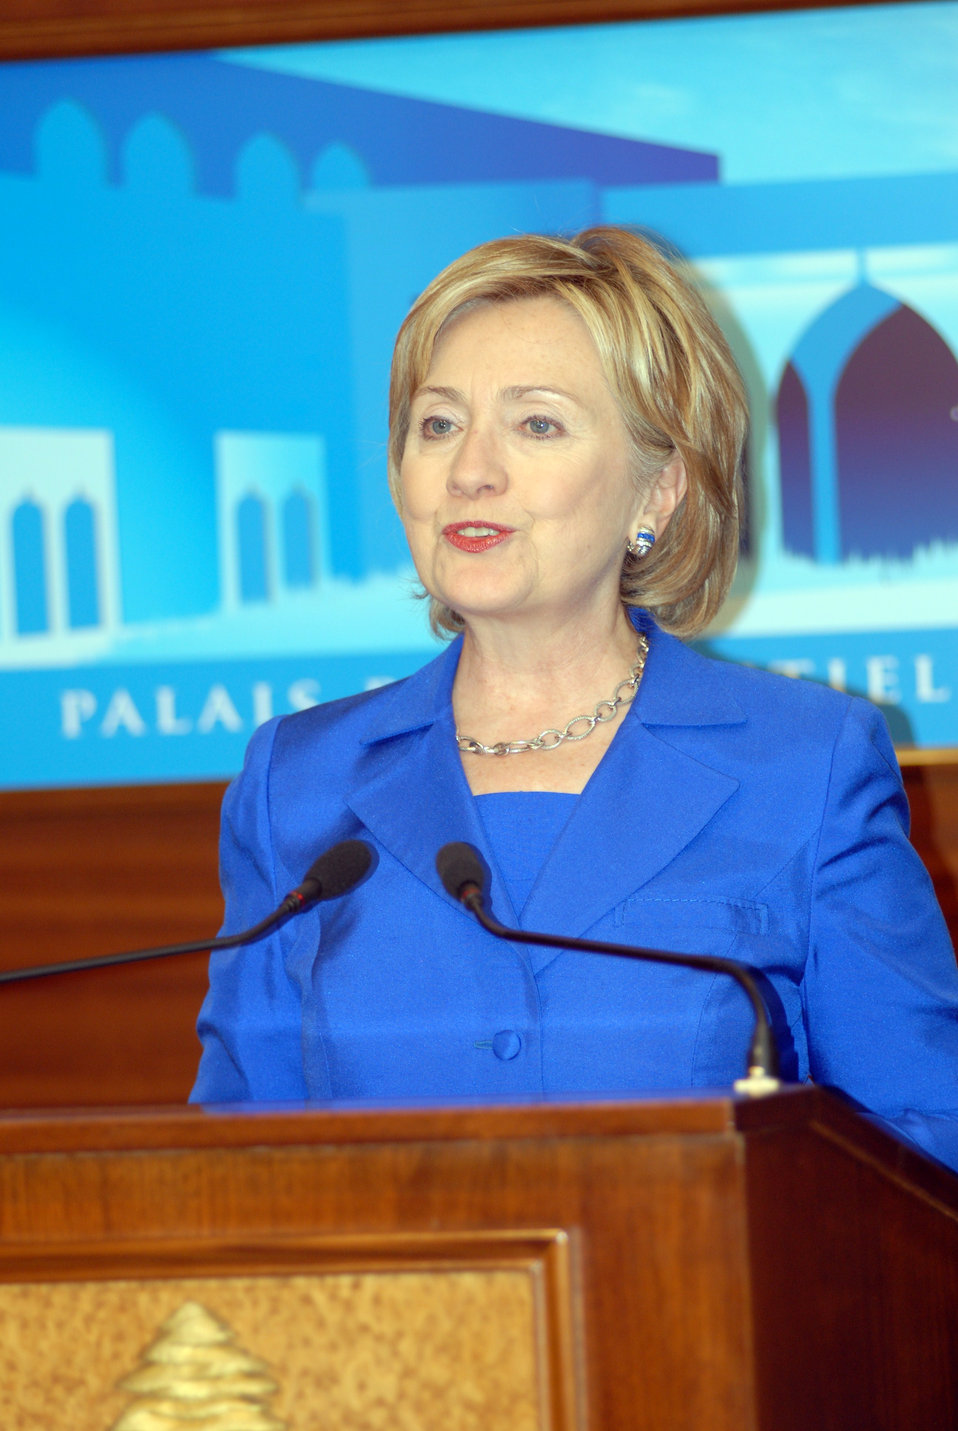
Secretary Clinton Meets With Lebanese President

U.S. Secretary of State Hillary Rodham Clinton at press availability following a meeting with Lebanese President Michel Sleiman in Beirut, Lebanon April 26, 2009.